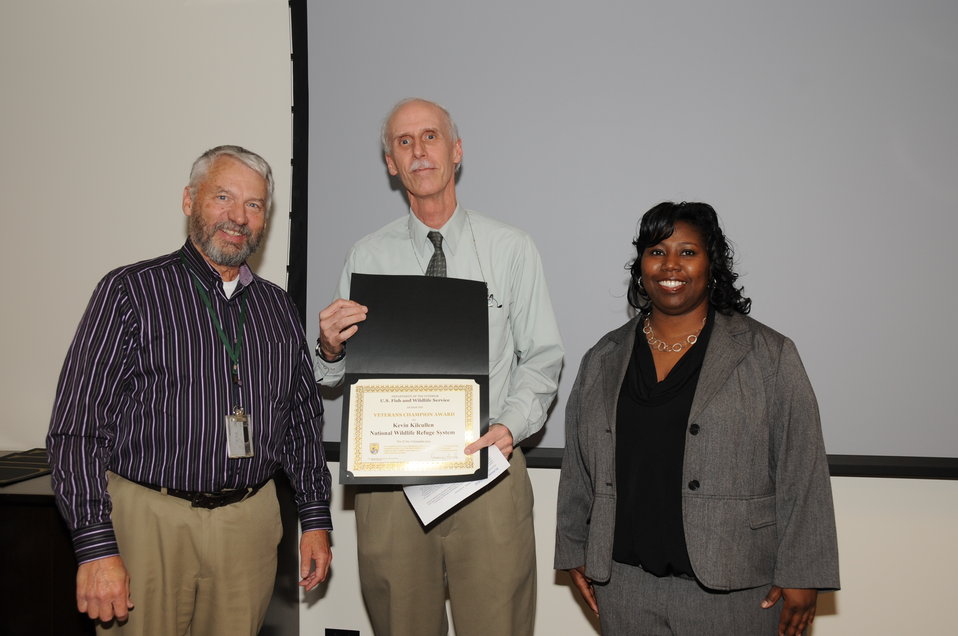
Honoring and Celebrating our Veterans

11.07.2012 Employees gathered in the Arlington Office to honor FWS Veterans